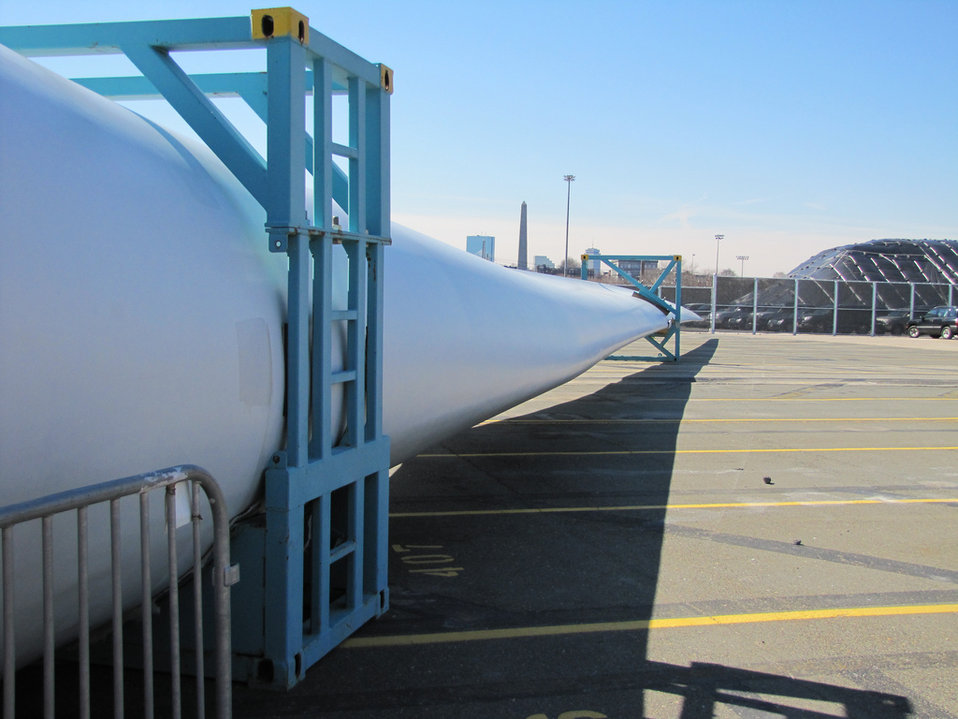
Wind Turbine Blade Test Prep

A 48 meter wind turbine blade at the Wind Technology Testing Center, the nation's first large-scale wind turbine testing facility.